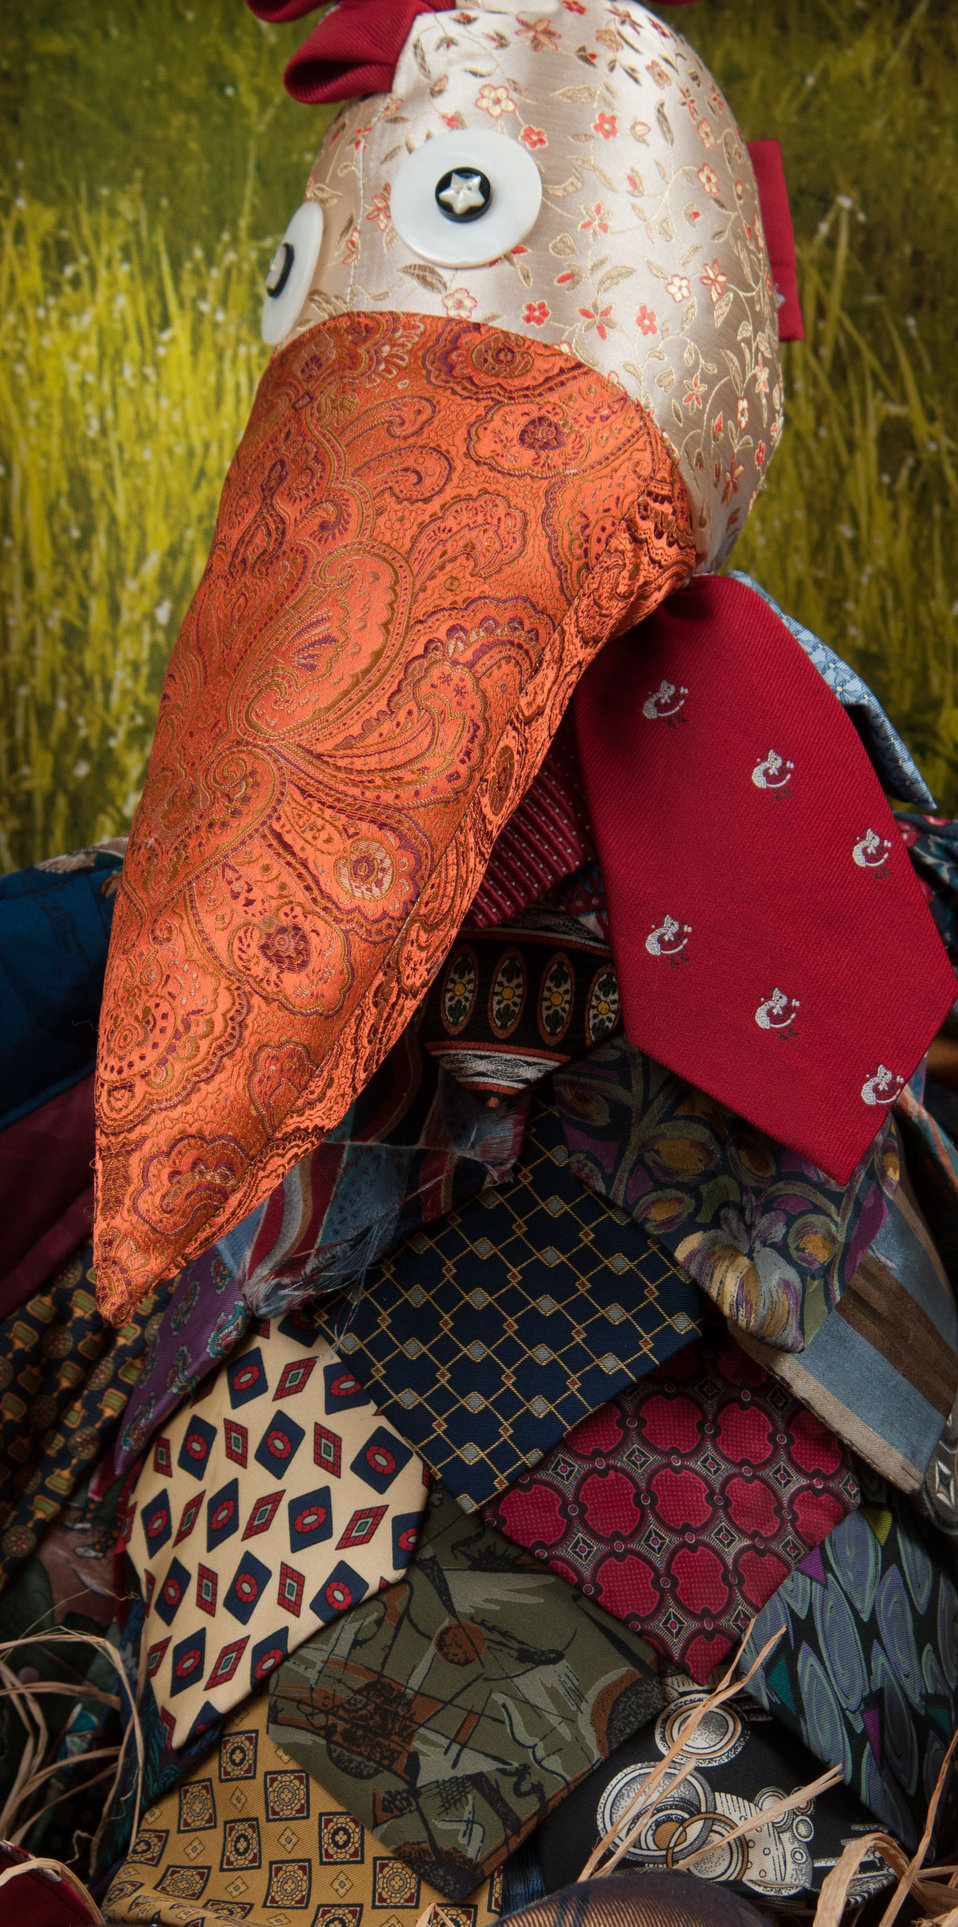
Online Viewer's Choice entries of the 2013 Art & Agriculture, Tuesday, July 9, 2013, in the South Building, Washington, D.C. Themes were expressed by employees from across the department and the contest was open to full-time and part-time USDA employees. Winning artwork will be displayed till the end of the year. U.S. Artistic expression is a creative outlet that is vital for an individual to grow and develop.